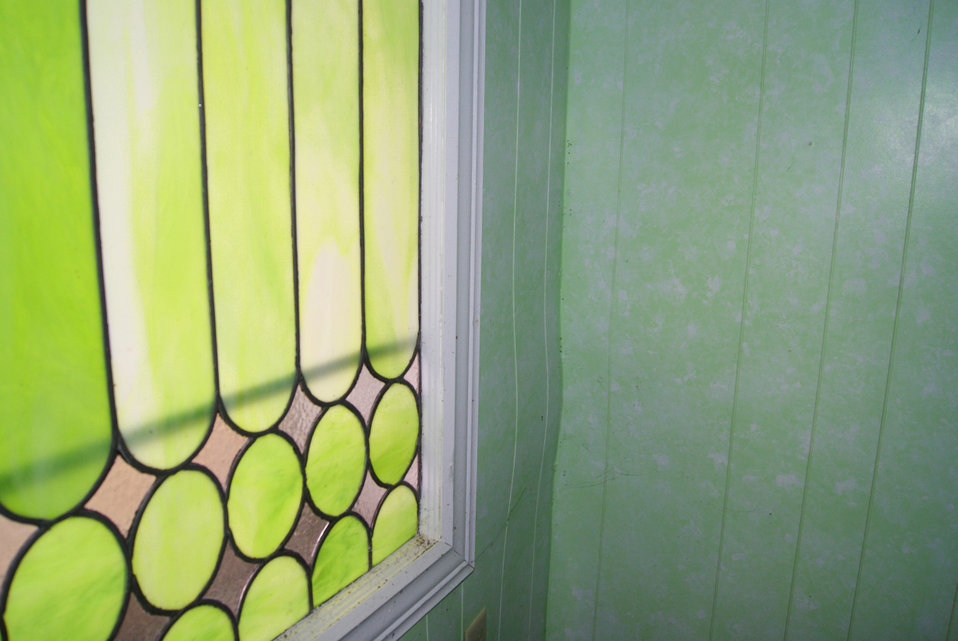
Green window

Green glass window and wall.